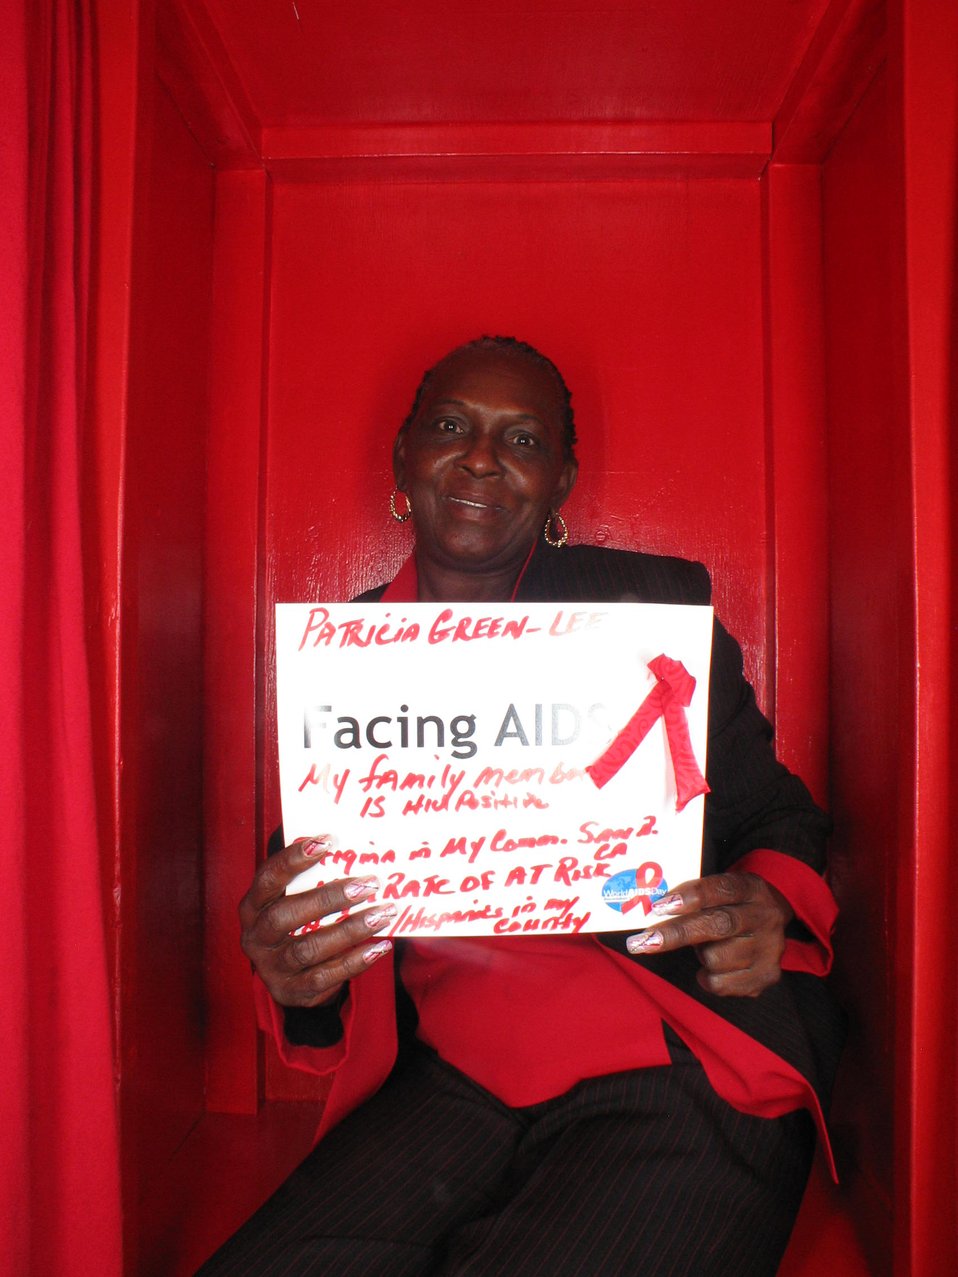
Facing AIDS my family member is HIV positive. Sitgma in my community.